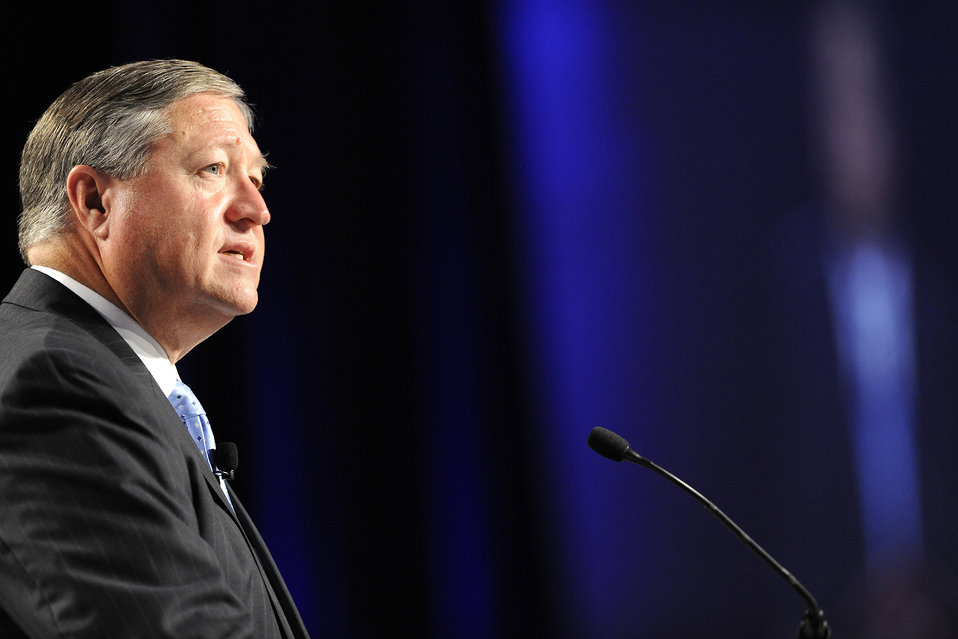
SecAF addresses AFA

Secretary of the Air Force Michael Donley delivers his keynote address during the Air Force Association's Air & Space Conference and Technology Exposition in Washington, D.C., on Sept. 17, 2012.